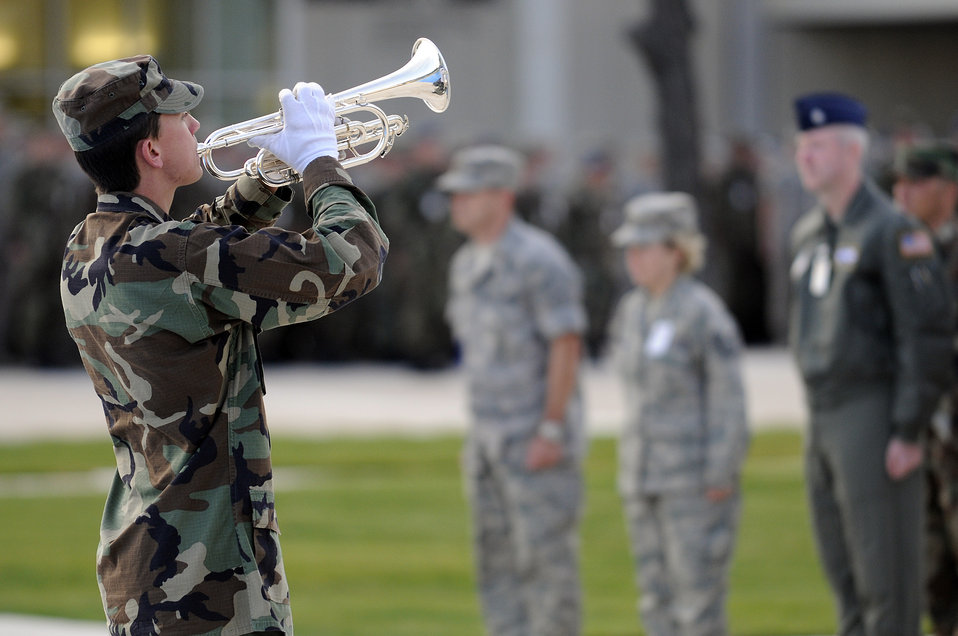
Reveille Ceremony

Cadet 1st Class Sean Harte plays reveille in honor of Patriot's Day and the Fallen Heroes of 9/11 at the U.S. Air Force Academy, Colo., Sept. 11, 2009. Cadet Harte is assigned to cadet squadron 28.